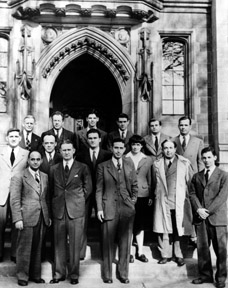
This team worked with Enrico Fermi during the Second World War in achieving the first self-sustained chain reaction in nuclear energy on December 2, 1942, at Stagg Field, University of Chicago.